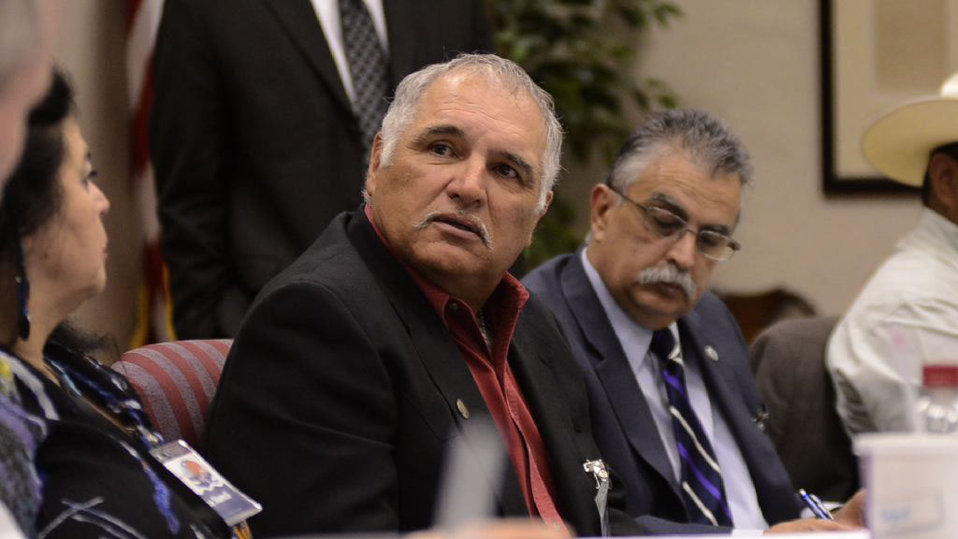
Gerald Lunak, Natural Resources Director, Blackfeet Nation, Cut Bank, Mont. listens to a speaker at the first administrative/training meeting of the U.S. Department of Agriculture's (USDA) Council for Native American Farming and Ranching (CNAFR) is held on Monday, Aug. 13, 2012 at the USDA headquarters Whitten Building, in Washington, D.C. CNAFR was created to advise the Secretary on ways to eliminate barriers to participation for Native American Farmers and Ranchers in USDA programs. The Council was established as part of the Keepseagle settlement, and is conducted under the oversight of USDA's Office of Tribal Relations, which is part of the Office of the Secretary of Agriculture. The Director of Tribal Relations Joanna Mounce Stancil serves as Designated Federal Official (DFO) for the Council.